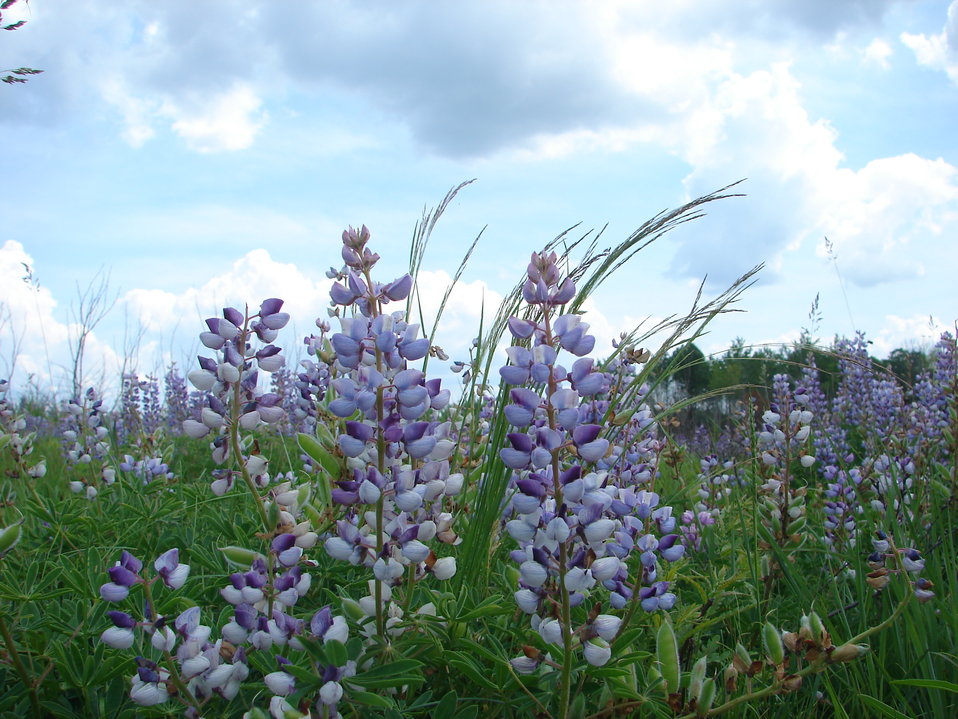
Necedah Lupine

Native lupine grows at Necedah National Wildlife Refuge in Wisconsin.